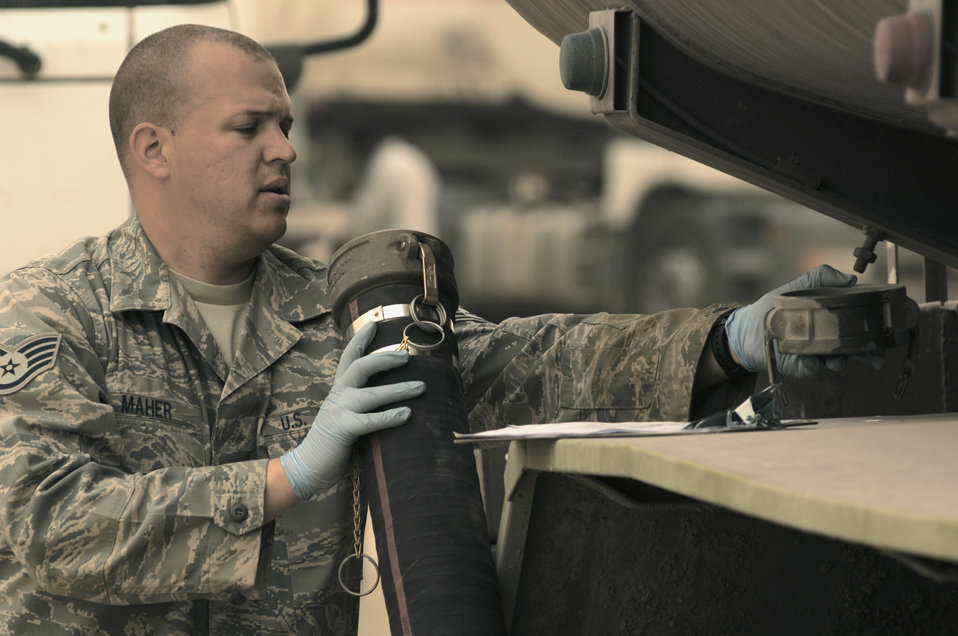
Fueled to fight

Staff Sgt. Kenneth Maher examines a fuel hose before downloading fuel from a truck into a bladder storage unit Feb. 26 in Southwest Asia. The fuels management flight is responsible for inventorying the fuel daily, and the transfer and issue of fuel to both vehicle operators and aircrews in support of operations Enduring Freedom and Iraqi Freedom. Sergeant Maher is a fuels technician from the 386th Expeditionary Logistics Readiness Squadron.